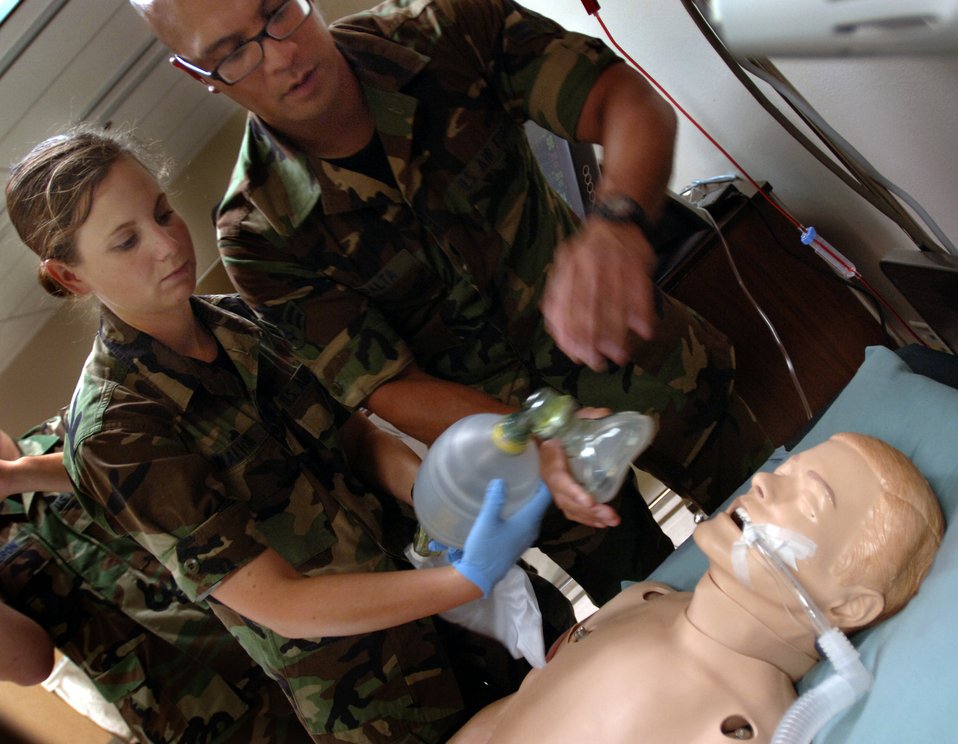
'New' patients make training more realistic

Airman Basic Nicole Walton and Airman 1st Class Shane Peralta try to revive a simulated patient from flat lining during technical training on Friday, July 21, at Sheppard Air Force Base, Texas. The simulated patient is one of seven new advanced medical tools used to help Air Force medical technical training students receive realistic instruction.